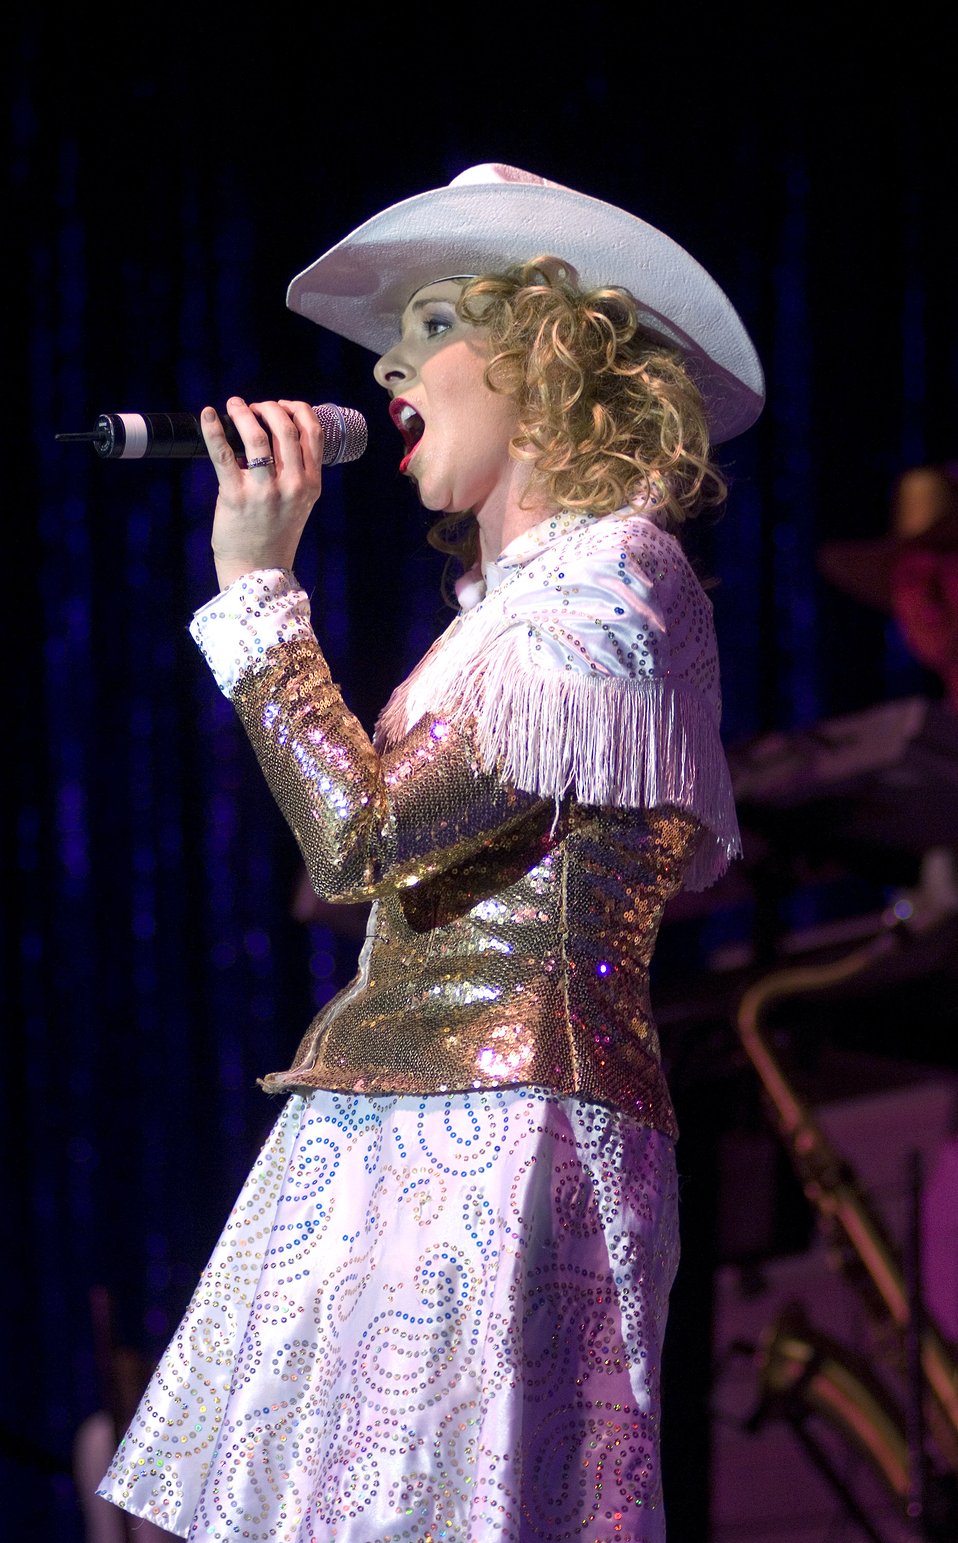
Air Force Week Atlanta

Honoring 60 years of Air Force history, Tech. Sgt. Jennifer Dack performs during the Tops in Blue